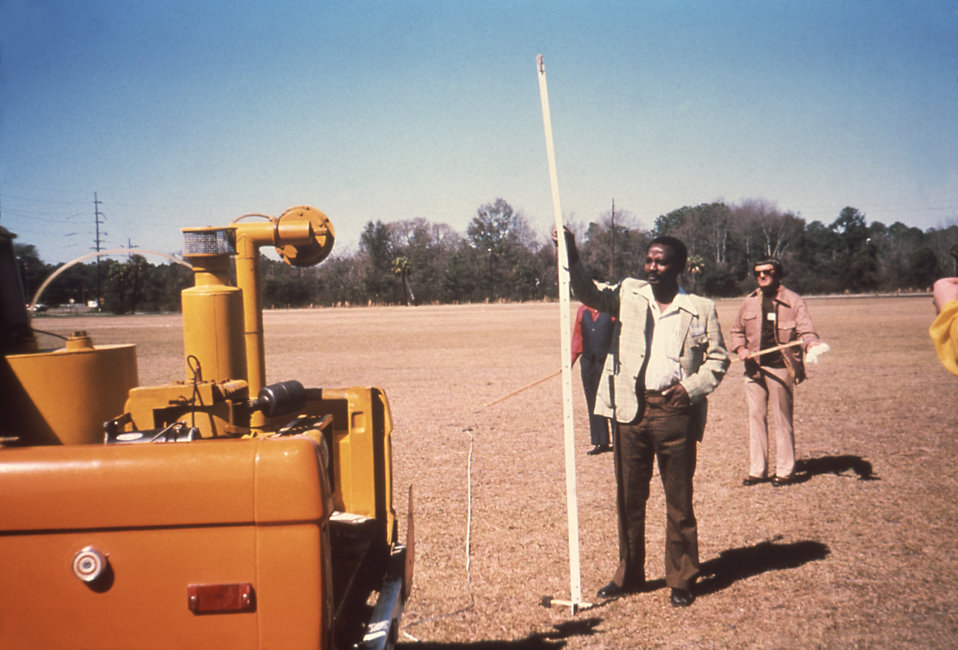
This 1981 photograph depicted a number of arboviral field technicians, one of whom is about to collect airborne insecticide droplets, which are being dispersed from a truck-mounted ultra low volume (ULV) fogger, using the 'Beidler method' of collection. About to drop a pendulum in front of the insecticide spray, droplets will hit, and adhere to the pendulum, the quantity of which will subsequently be analyzed.